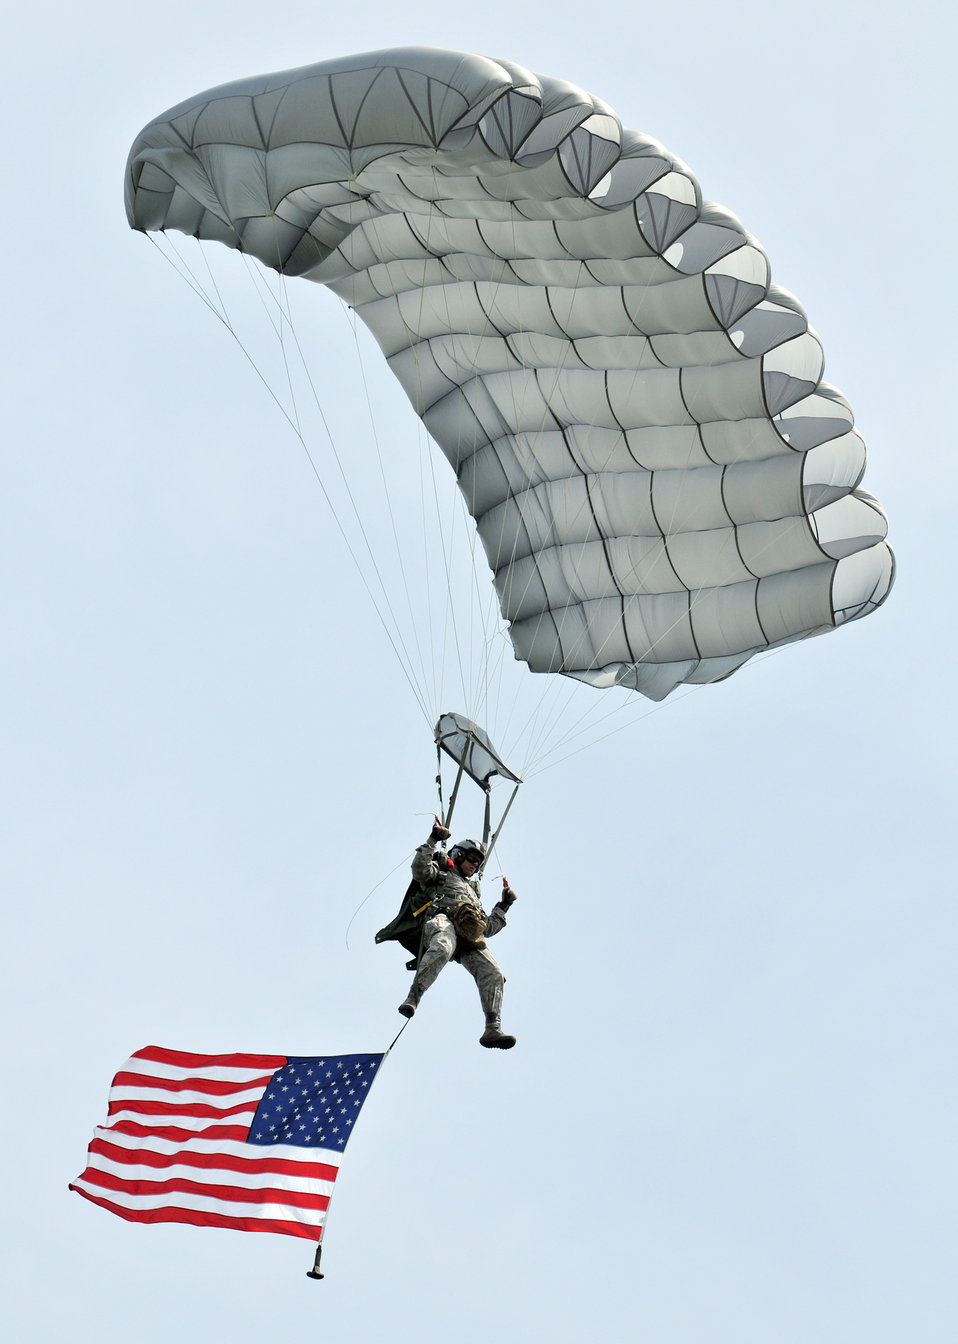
D-Day 66th anniversary

A member of the 321st Special Tactics Squadron flies the American flag over the